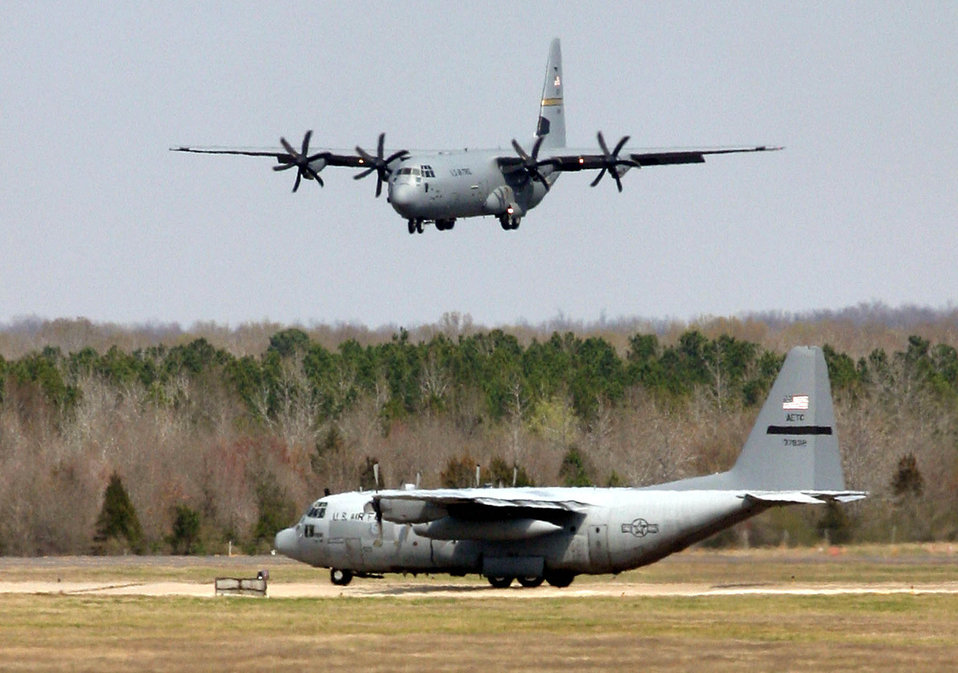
The

LITTLE ROCK AIR FORCE BASE, Ark. (AFPN) -- The C-130J Hercules is the latest addition to the C-130 fleet. The C-130J provides life-cycle cost savings over earlier models. Compared to older aircraft, the J model climbs faster and higher, flies farther at a higher cruise speed, and takes off and lands in a shorter distance.